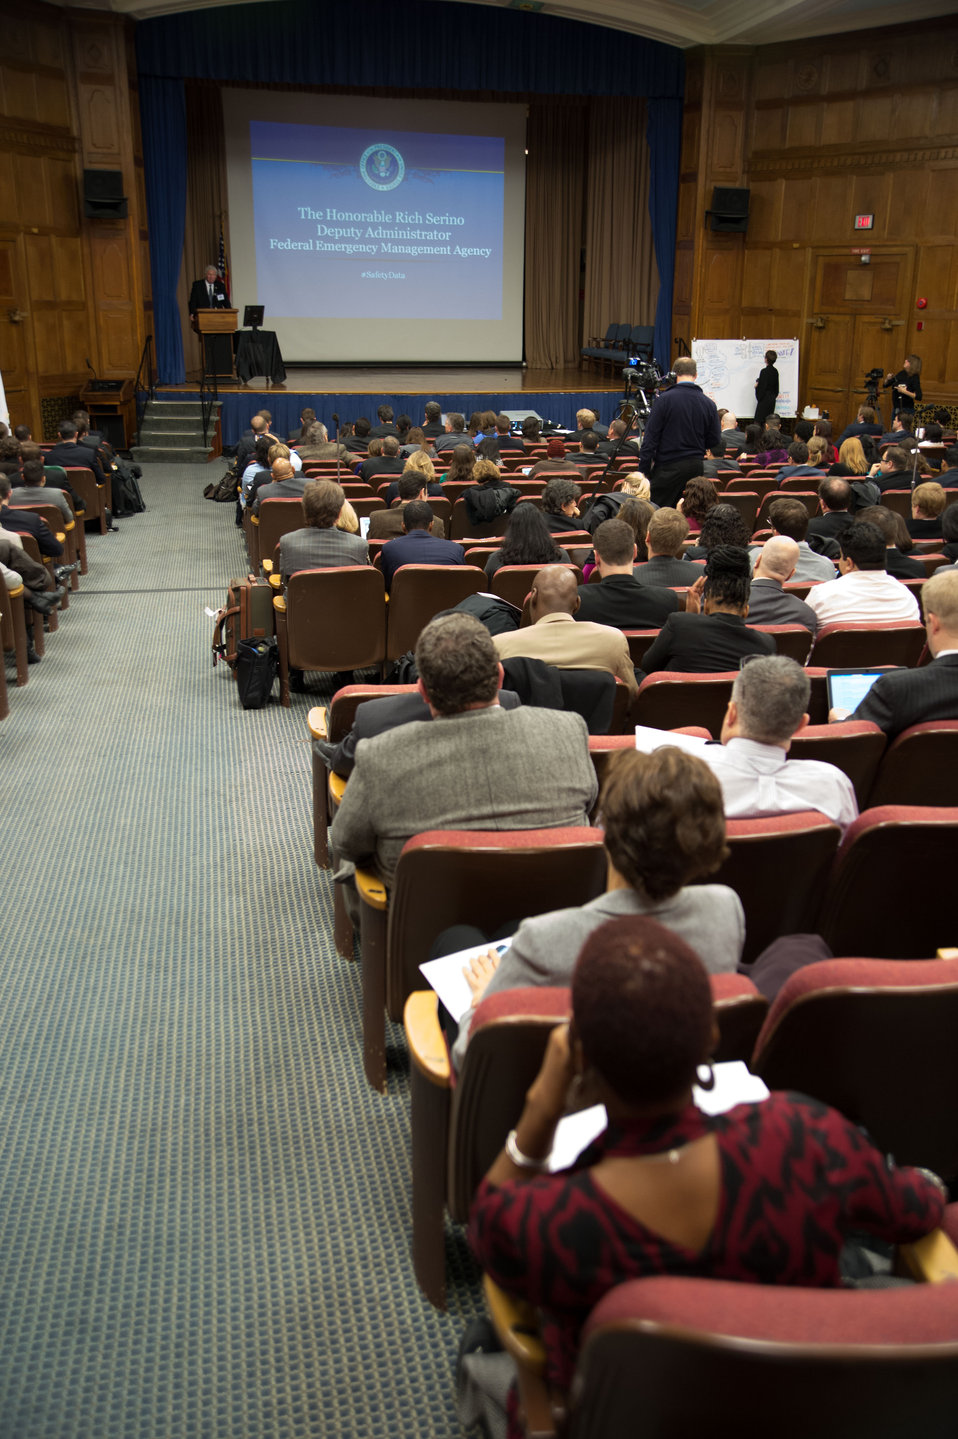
The audience listens to Federal Emergency Management Agency (FEMA) Deputy Administrator Rich Serino speak at the second annual “Safety Datapalooza,” in the Jefferson Auditorium at USDA in Washington, D.C. on Tuesday, Jan. 14, 2014. The “Safety Datapalooza,” highlights innovators from the private, nonprofit, and academic sectors who have used freely available government data to build products, services, and apps that advance public safety in creative and powerful ways. This year’s meeting features new safety data resources in the areas of transportation, food, occupational and consumer product safety tools to improve disaster preparedness and emergency response.